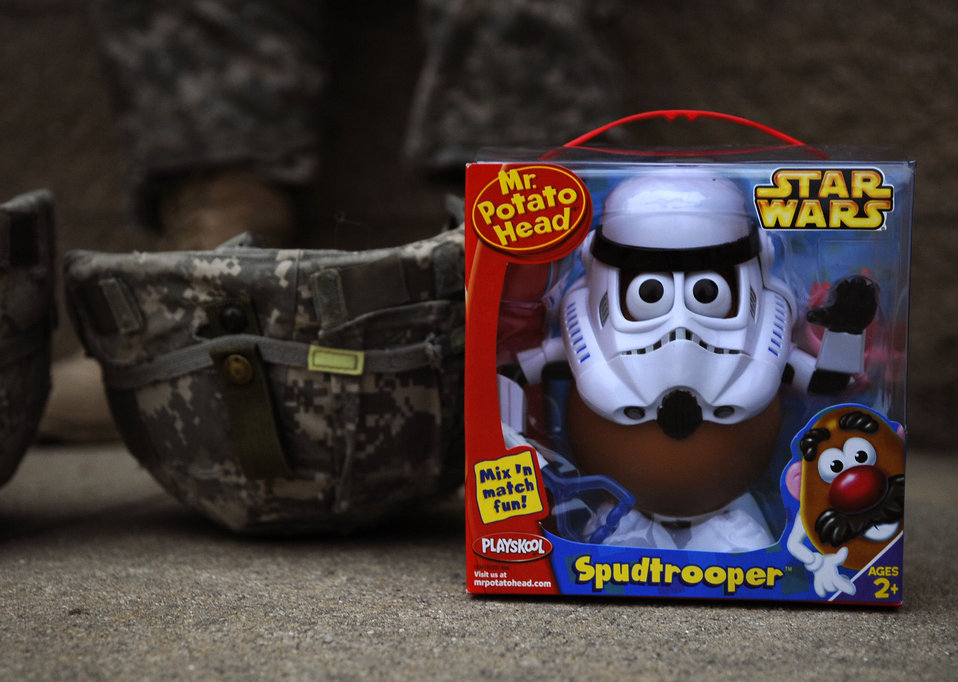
Operation Toy Drop

Toys sit on the sidewalk as Army Soldiers from the 82nd Airborne Division from Fort Bragg, N.C., wait in line to donate a toy and a chance to be picked in a lottery for an opportunity to earn foreign jump wings Dec. 5 during Operation Toy Drop at Pope Air Force Base, N.C. Operation Toy Drop is an annual Airborne jump at Fort Bragg in its 11th year hosted by the Army Civil Affairs and Psychological Operations Command (Airborne), and supported by Fort Bragg's XVIII Airborne Corps and the Air Force Reserve Command's 440th Airlift Wing that gives Soldiers and Airmen the opportunity to help local families in need over the holidays while boosting morale and incorporating valuable training. More than 3,000 Soldiers donated a toy for a lottery ticket and the chance to jump under a foreign jumpmaster, earning them their foreign jump wings. This year, German and Irish jumpmasters will be issuing the commands from C-130 Hercules aircraft during the operation.